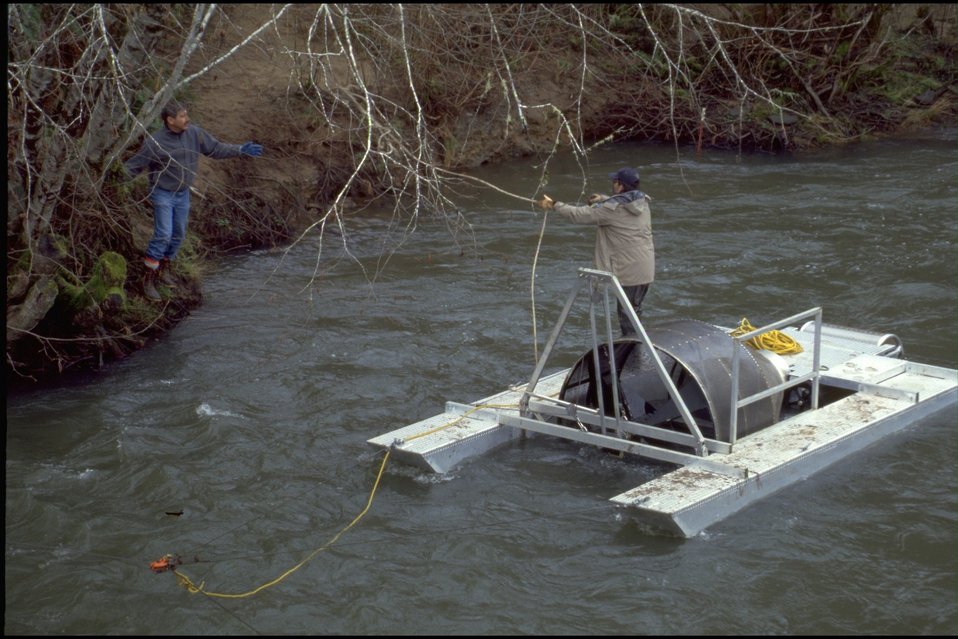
Installing Fish Trap on Wolf Creek.